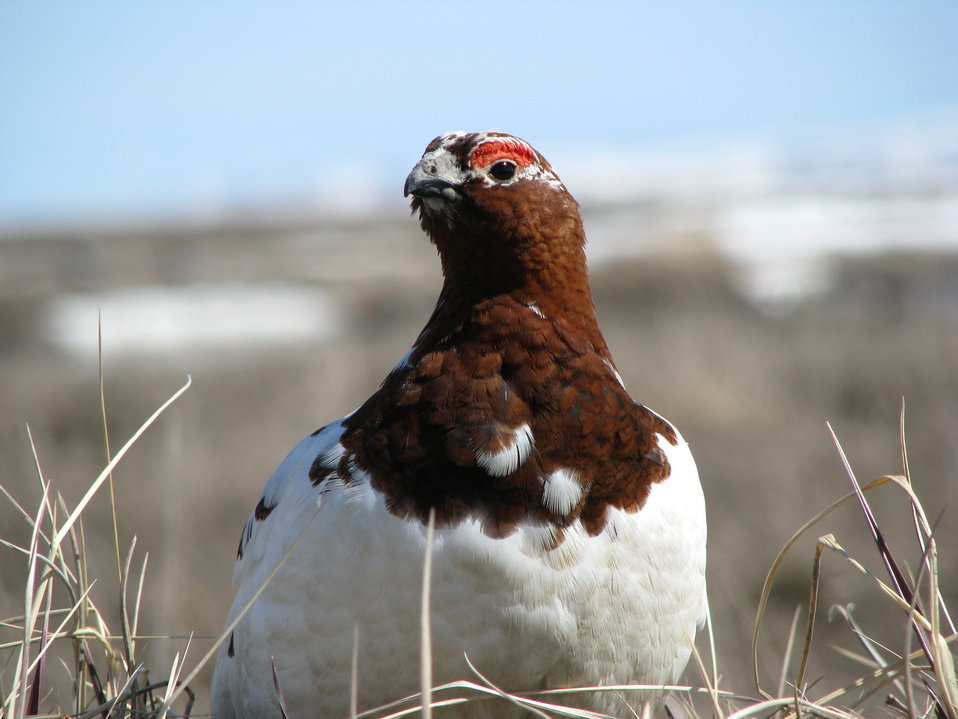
Close up of male willow ptarmigan

USFWS Yukon Delta NWR